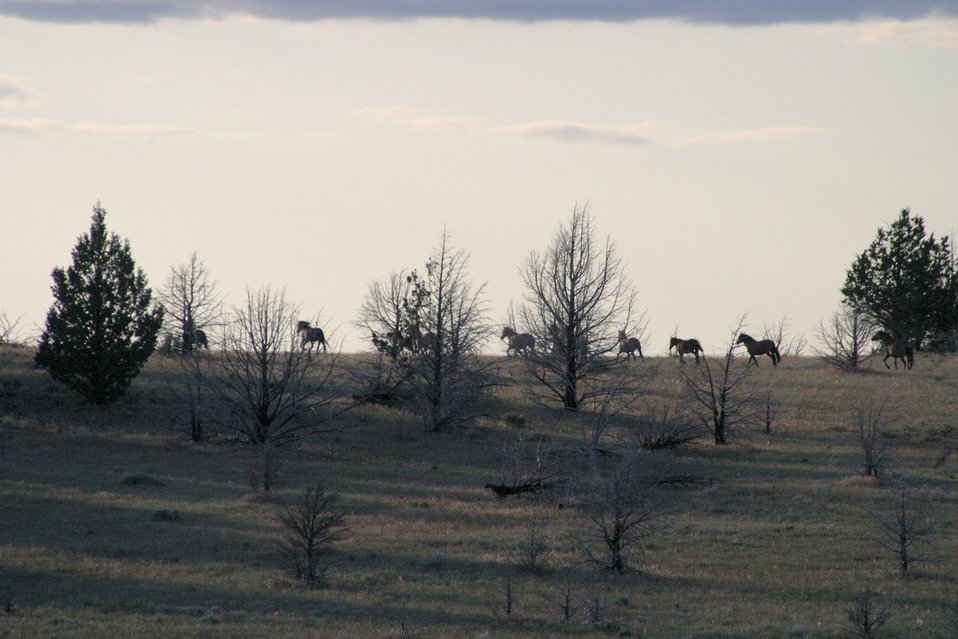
Wild Horse(s) in the Kiger Wild Horse Herd Management Area.